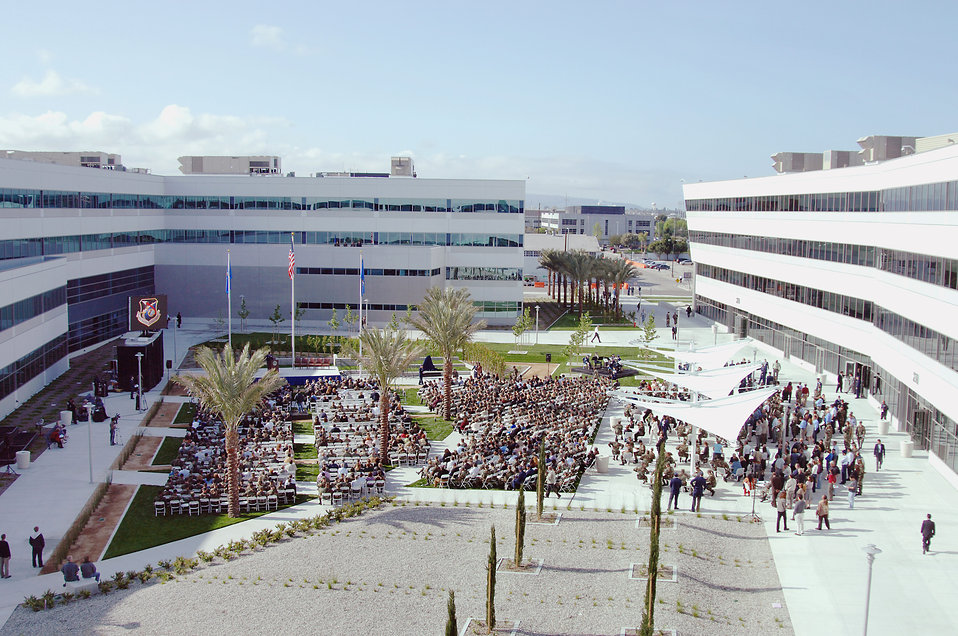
Los Angeles AFB dedicates new Schriever Space Complex

More than 1,000 civic leaders, Airmen, base employees and guests gather for the dedication of the new Schriever Space Complex in El Segundo, Calif., on Monday, April 24, 2006.